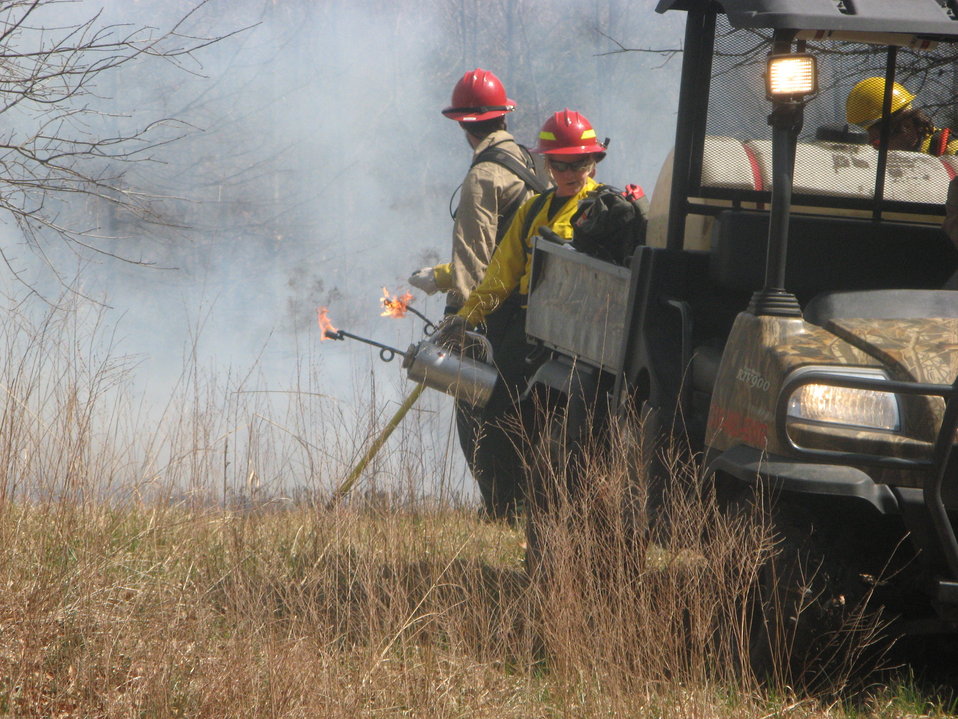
Ready to fire

Laurel, MD: Poised with lit drip torches, firefighters are ready to light a controlled burn at Patuxent National Research Refuge.